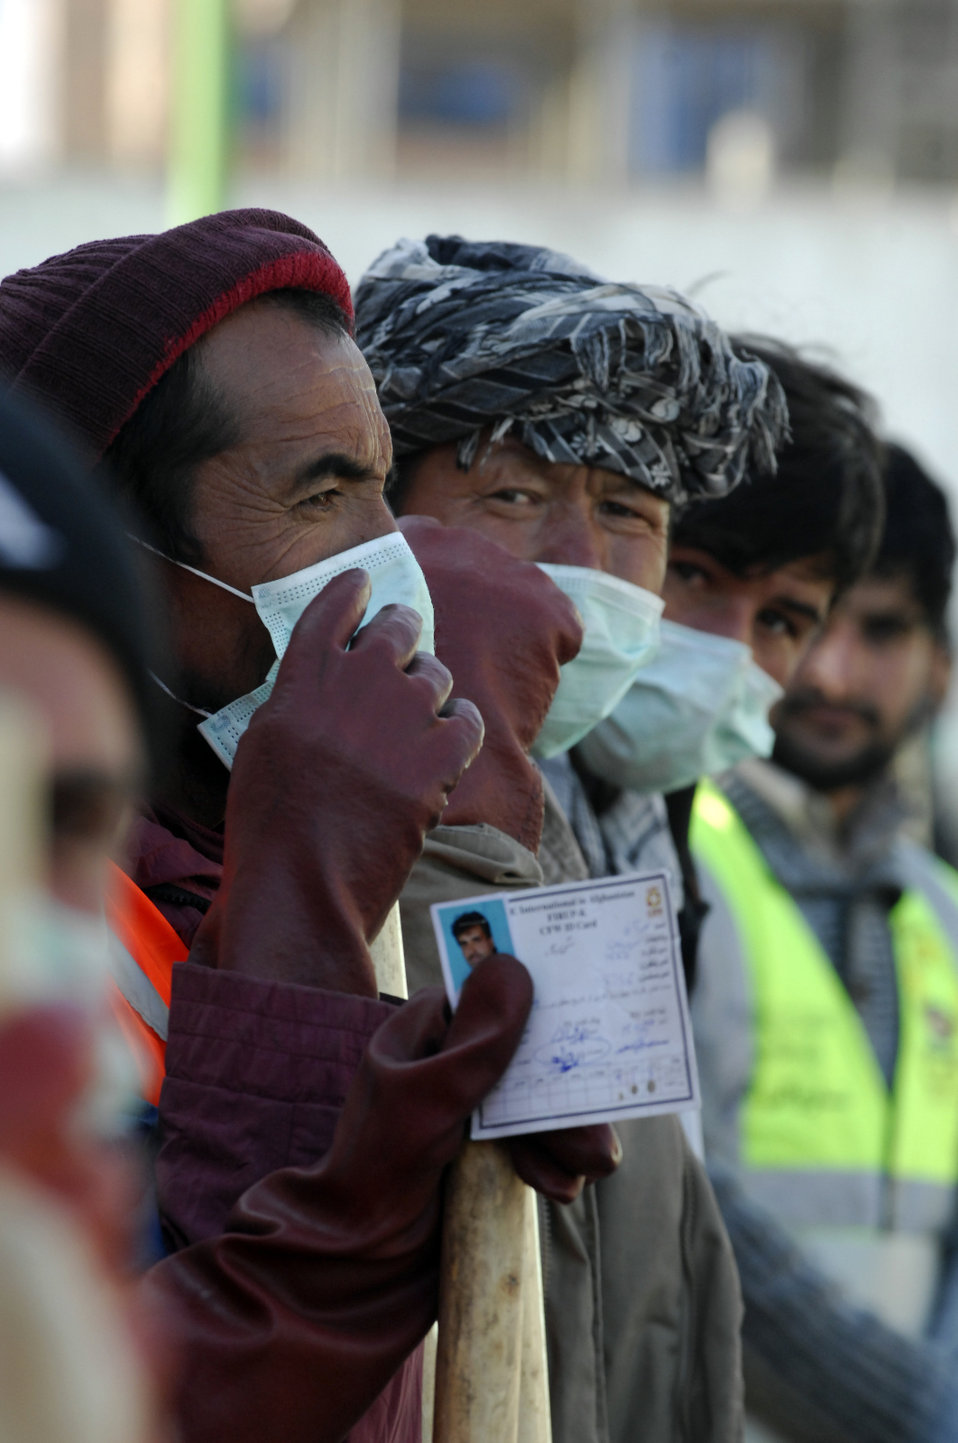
Care75